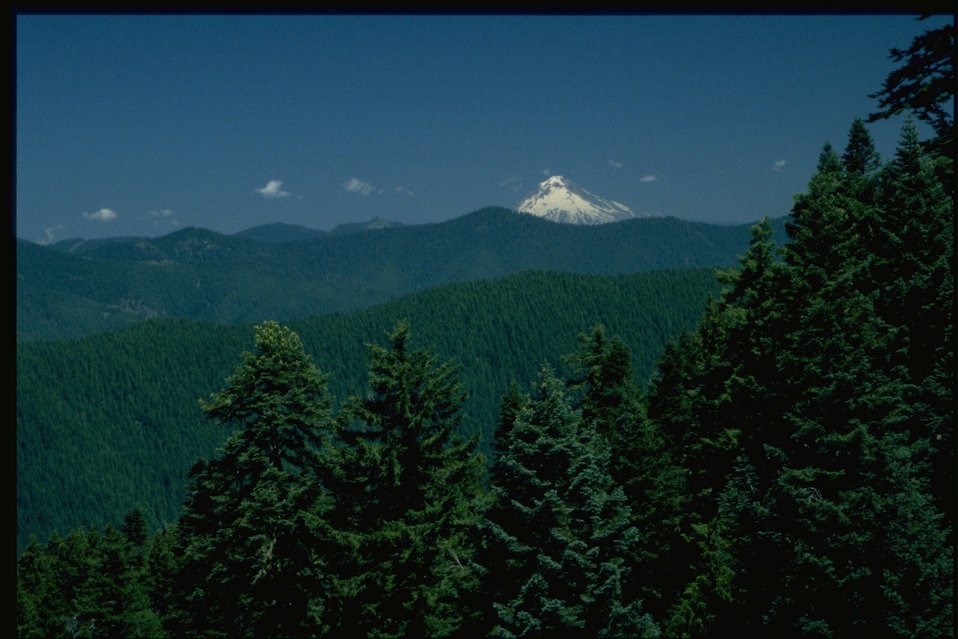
Scenic view from Mt. Horeb, Mt. Hood in the distance.